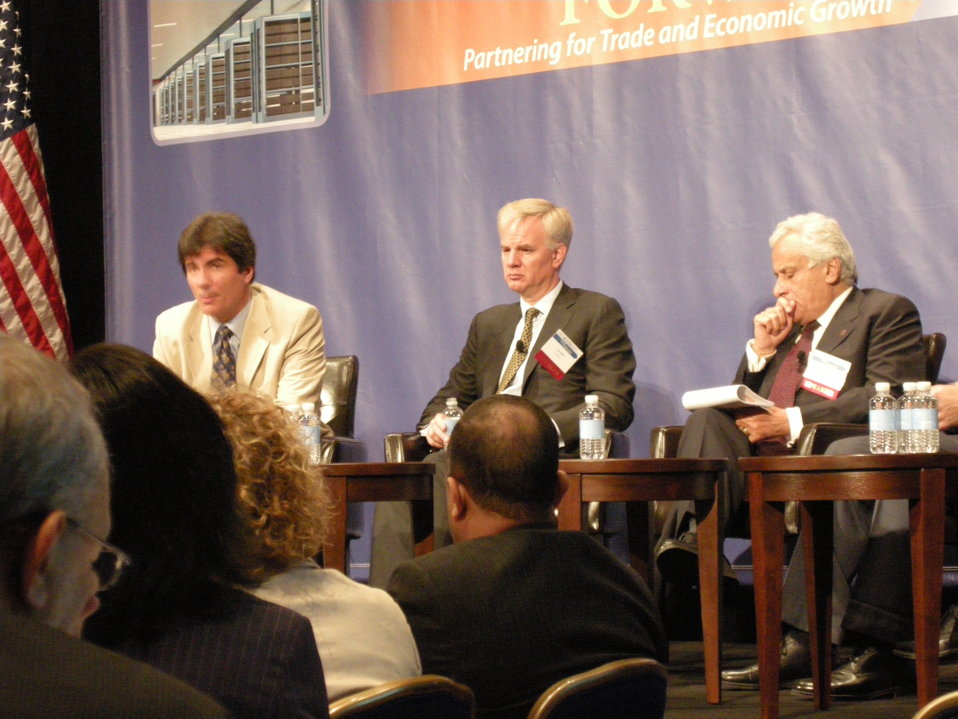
Assistant Secretary Fernandez Moderates an Executive Roundtable at the USTDA’s “Egypt: Forward Forum”

Assistant Secretary of State for Economic, Energy and Business Affairs Jose Fernandez moderates an executive roundtable at the U.S. Trade and Development Agency's (USTDA) 'Egypt: Forward Forum' in Washington, D.C., on June 27, 2011. The forum is a two-day event that brings representatives from Egypt's energy, information and communication technology, transportation, and agribusiness sectors to discuss trade, investment, and commercial opportunities with the public and private sector in the United States.